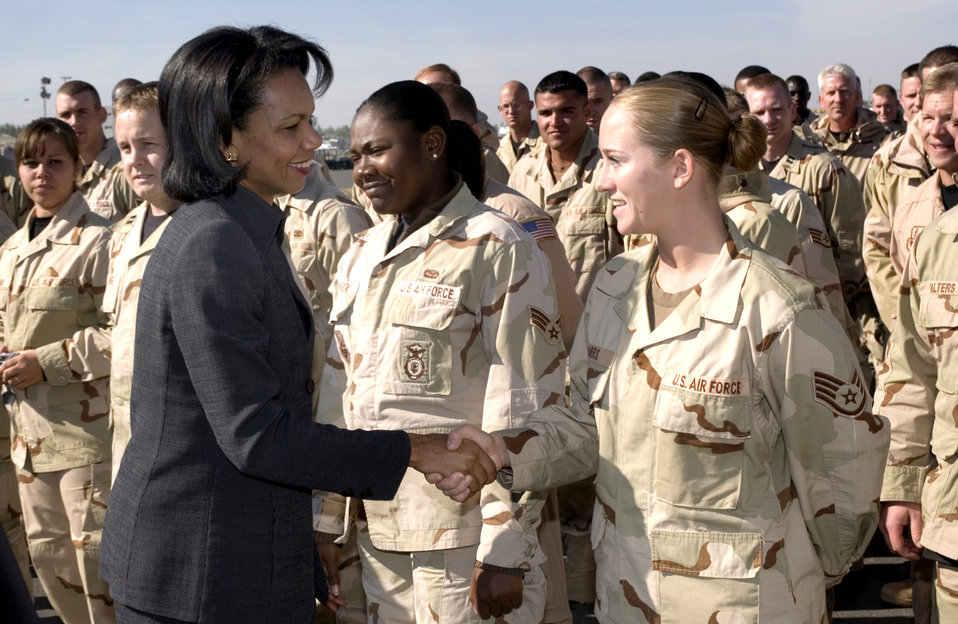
Operation Enduring Freedom

MANAS AIR BASE, Kyrgyzstan -- Secretary of State Dr. Condoleezza Rice shakes hands with Staff Sgt. Gabrielle Harris during her visit here Oct. 8. The secretary spoke to troops before traveling to Bishkek, Kyrgyzstan, to meet with Kyrgyz officials, during the first in a series of countries she will visit in Central Asia.